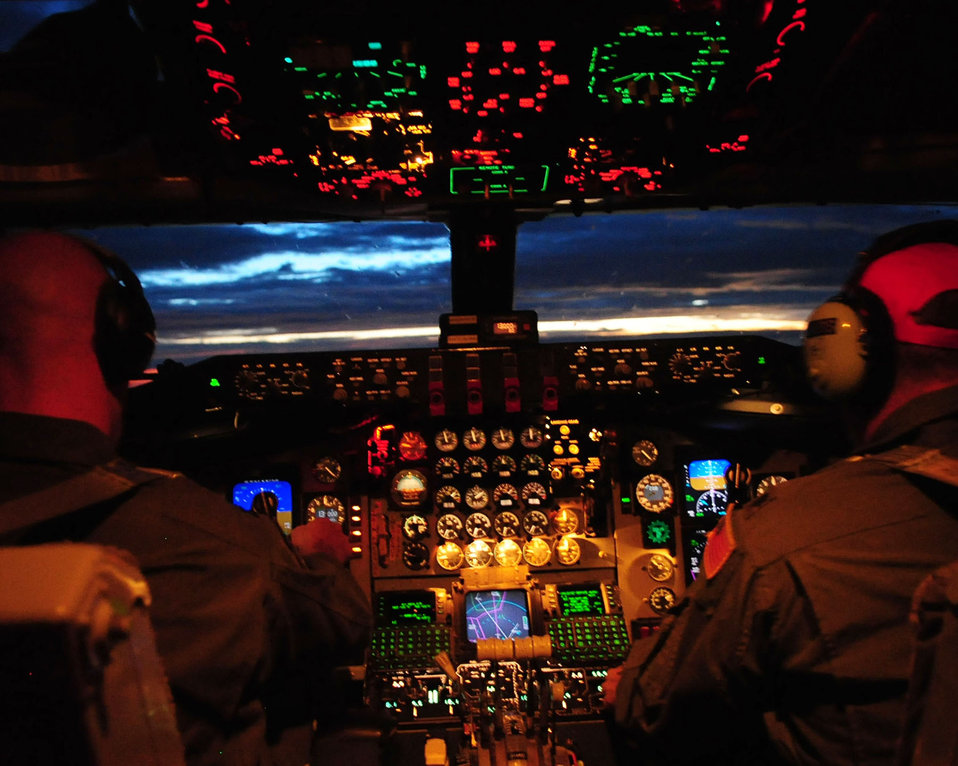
What time is it?

Capt. Jim Moretti (left) and Lt. Col. Chuck Tubbs fly a KC-135 Stratotanker during an aerial refueling mission over Southern Arizona July 22, 2010, to support pilots from the 358th Fighter Squadron. The pilots are from the Pennsylvania Air National Guard's 171st Air Refueling Wing based out of Pittsburgh International Airport.